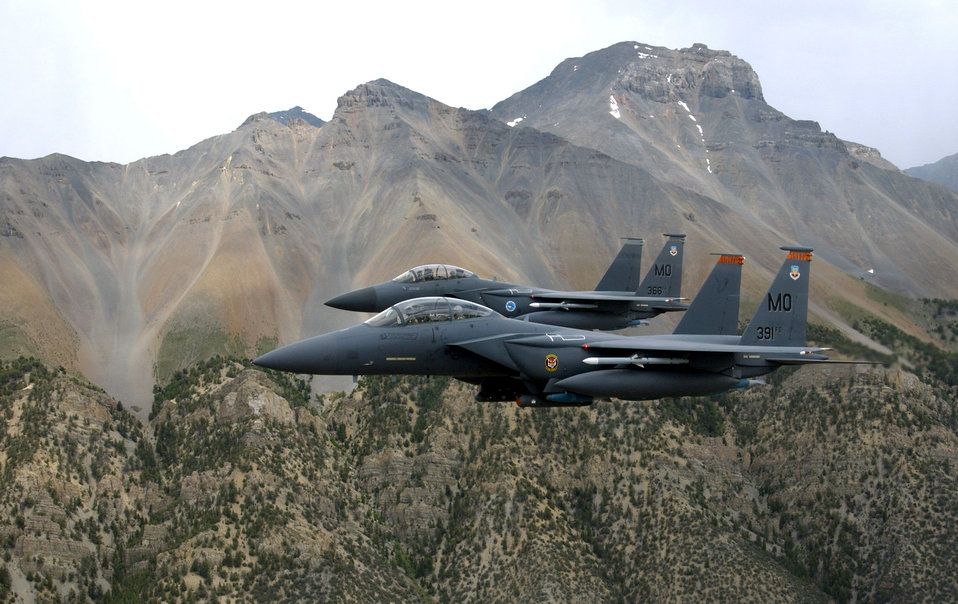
Strike Eagles hunting

MOUNTAIN HOME AIR FORCE BASE, Idaho -- Two F-15E Strike Eagles perform a low-level training mission over the Sawtooth Mountain Range. The Strike Eagles give the 366th Fighter Wing here sophisticated air-to-ground attack capabilities and air-to-air superiority. They can be equipped with both laser-guided weapons and air-to-air missiles, and use the low-altitude navigation and targeting infrared for night, or LANTIRN system, to find and destroy targets at night in all kinds of weather with precision.